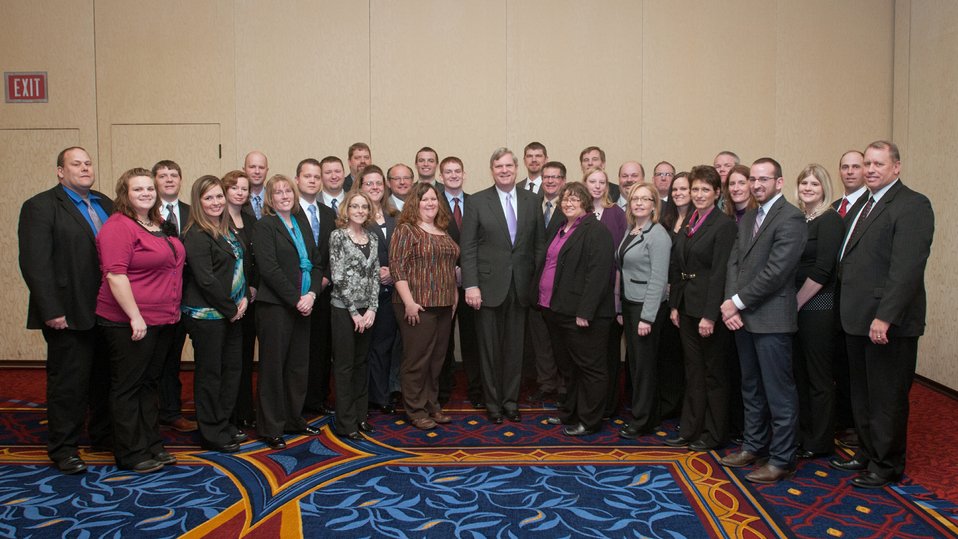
Agriculture Secretary Tom Vilsack (center) with members of the South Dakota Agricultural and Rural Leadership, Inc. (SDARL) at the 2013 Agricultural Outlook Forum, held at the Crystal Gateway Marriott Hotel, Arlington, Virginia on Thursday, Feb. 21, 2013. This annual Forum brings together producers, policymakers, and business, government, and industry leaders to meet, exchange ideas, and discuss timely agriculture issues. SADRL is a 501c3 not for profit organization offers a leadership program for agriculture and rural communities.